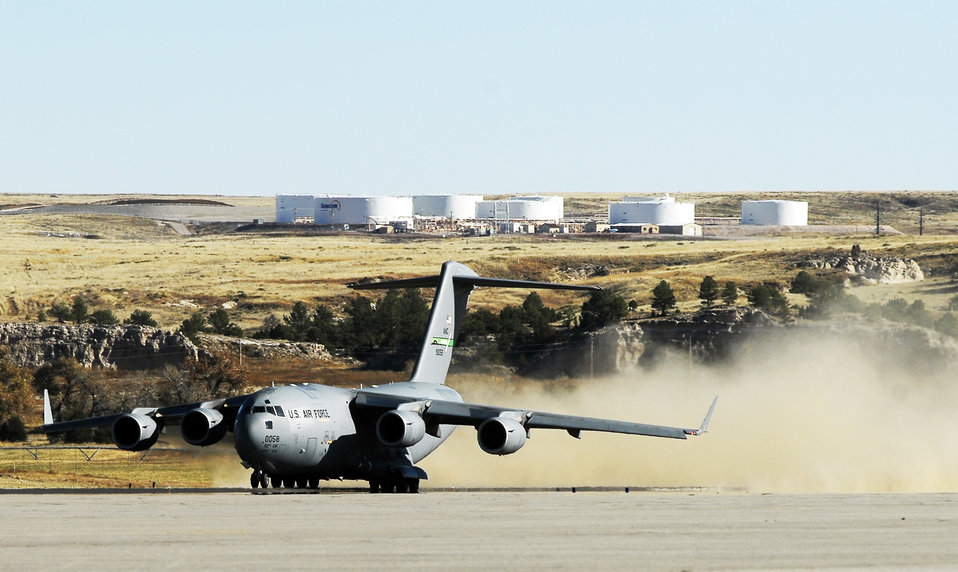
C-17 tests updated airfield

A C-17 Globemaster III from McChord Air Force Base, Wash., takes off from the Wyoming National Guard's Guernsey Army Airfield in Guernsey, Wyo., Oct. 17, 2009, during the official opening of the updated airstrip now capable of handling the massive cargo aircraft. The airstrip is now able to park up to 23 fixed-wing aircraft, including three C-17s. In addition to the civilian-military airstrip, Camp Guernsey also boasts nearly 70,000 acres of terrain and supports approximately 65 square miles of restricted air space up to 30,000 feet.